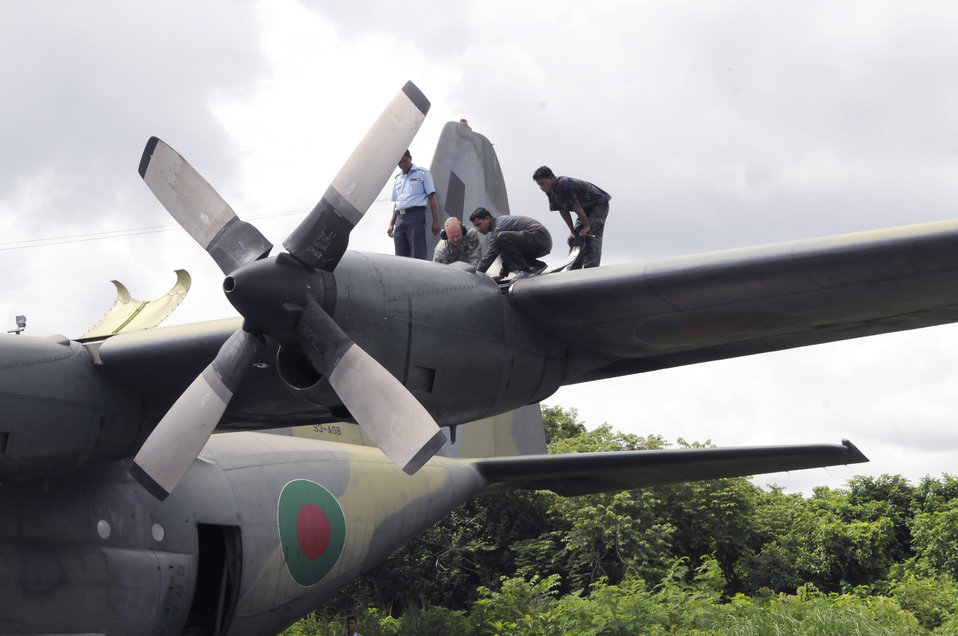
U.S., Bangladesh airmen team up for Cope South 2010

Staff Sgt. Kevin Stubblefield helps Bangladesh air force Sgts. Eakub Ali, S.M. Iqbal and Military Warrant Officer Golam Faruque troubleshoot an engine problem on a Bangladesh C-130 Hercules during exercise Cope South 10, Sept. 20, 2010, at Kurmitola Air Base, Bangledesh. The bilateral exercise's subject-matter expert exchanges in maintenance, operations and rigging disciplines strengthen the strong and growing partnership between the United States and Bangladesh. Sergeant Stubblefield is an aircraft maintainer from the 374th Maintenance Squadron at Yokota Air Base, Japan. The Bangladesh airmen are aircraft maintainers.